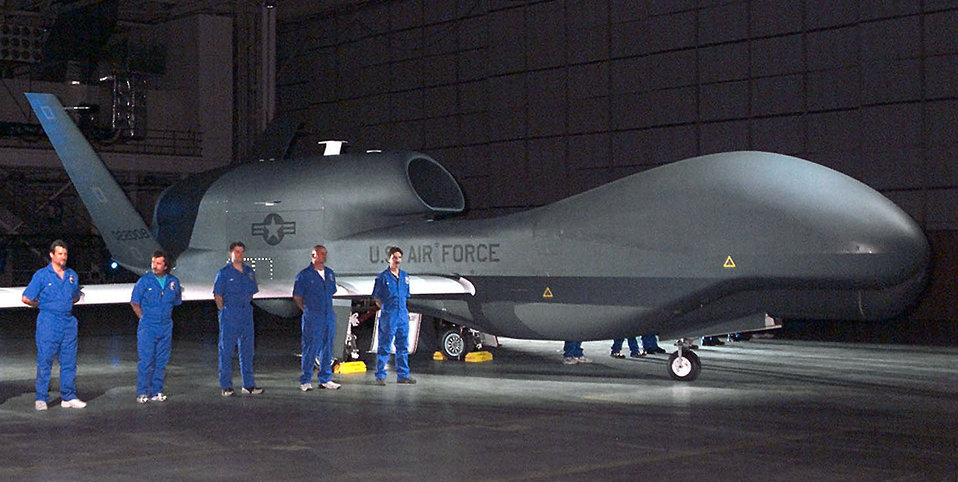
Production Global Hawk debut

WRIGHT-PATTERSON AIR FORCE BASE, Ohio (AFPN) -- The first production RQ-4A Global Hawk unmanned aerial vehicle rolled out in ceremonies held Aug. 1 at prime contractor Northrop Grumman's Antelope Valley Manufacturing Center at Air Force Plant 42 in Palmdale, Calif.